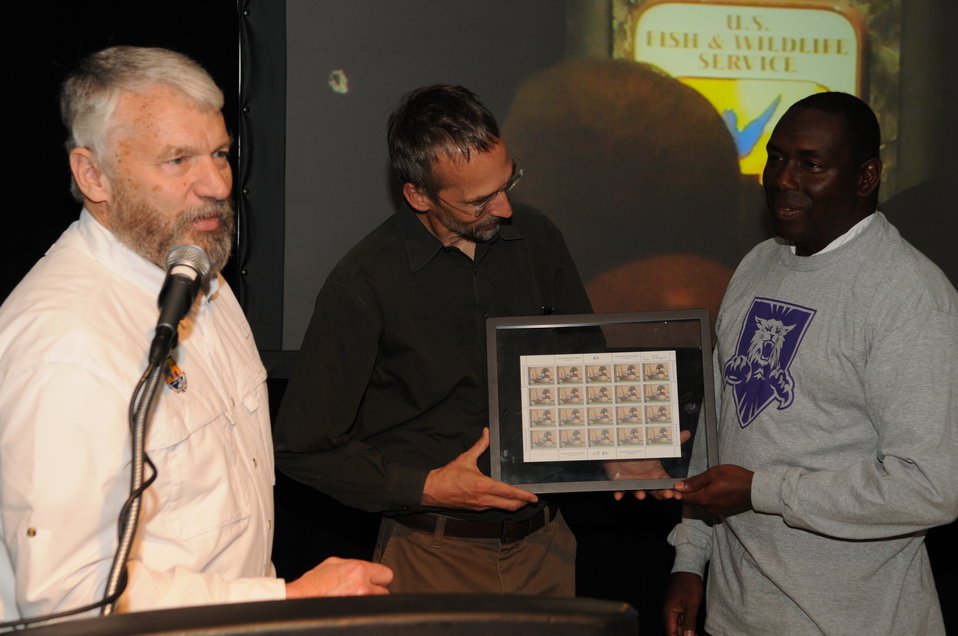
Birds in Focus Recognition

The U.S. Fish & Wildlife Service sponsored the 2012 Federal Duck Stamp Art Contest September 28 and 29 in Ogden, Utah, at Weber State University. A panel of five judges was responsible for choosing the art work used to design the 2013-2014 Migratory Bird Hunting and Conservation Stamp.